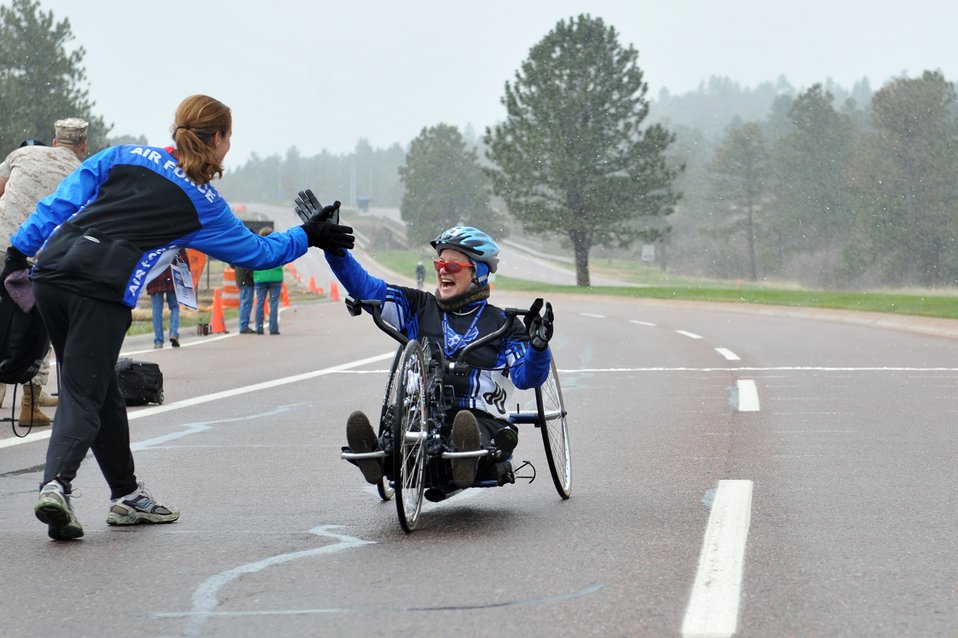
Warrior Games AF Cycling

Jeanne Goldy-Sanitate receives a high five from Air Force head coach Cami Stock after completing the 10-kilometer hand cyle start bike race for the inaugural Warrior Games May 13, 2010, at the U.S. Air Force Academy in Colorado Springs, Colo. Goldy-Sanitate is one of some 200 disabled veterans participating in the Paralympic-style competition May 10 through 14.